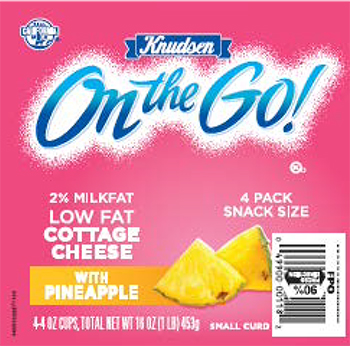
RECALLED – Cottage Cheese products

May 17, 2014 – Product Recall – Kraft Foods Group Voluntarily Recalls Select Cottage Cheese Products Due to Out-of-Standard Storage Temperatures
Certain Knudsen Cottage Cheese, Breakstone’s Cottage Cheese, Simply Kraft Cottage Cheese and Daily Chef Cottage Cheese Products Included in the Recall
.